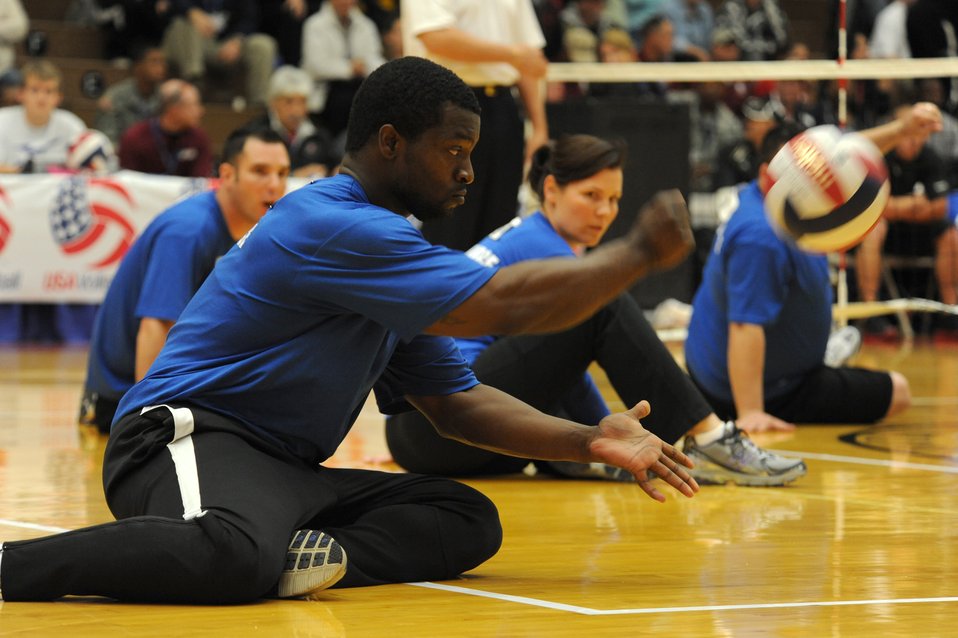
AF Volleyball wins Bronze at Warrior Games

Air Force Warrior Games athlete, Matt Sanders, serves the ball during the Warrior Games sitting volleyball match against Army at the U.S. Olympic Training Center in Colorado Springs, Colo., May 13, 2010.